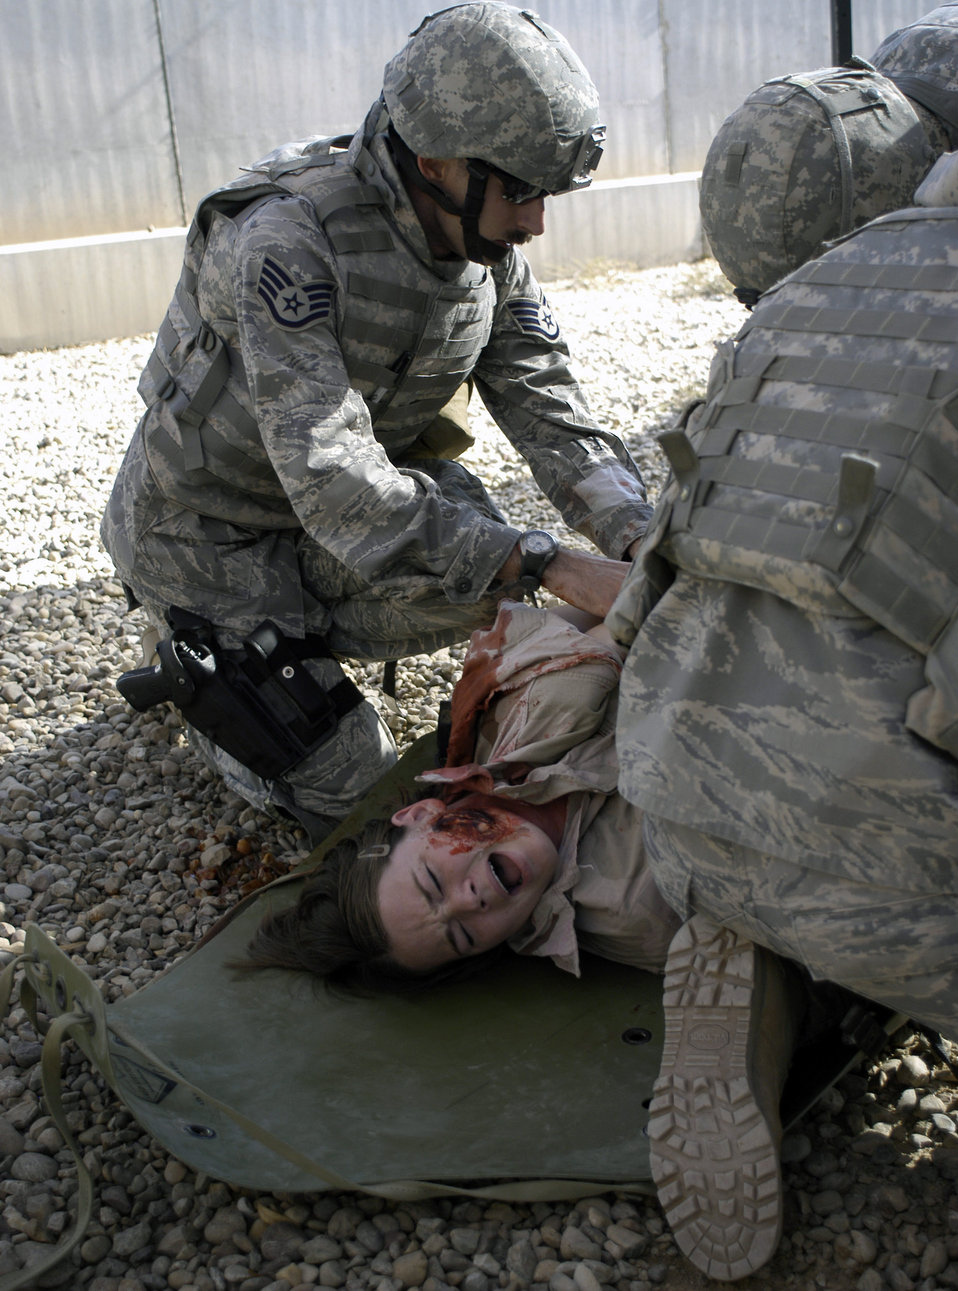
Airmen train to start warrior care on the battlefield

Staff Sgt. Rodney Franken coordinates treatment for a roleplayer who was simulated wounded for training Nov. 12 at Joint Base Balad, Iraq. Sergeant Franken is a security forces journeyman assigned to the 532nd Expeditionary Security Forces Squadron deployed from the 435th Security Forces Squadron, at Ramstien Air Force Base, Germany. He attended combat lifesaver training, which is a requirement for personnel in the 332nd Expeditionary Security Forces Group.